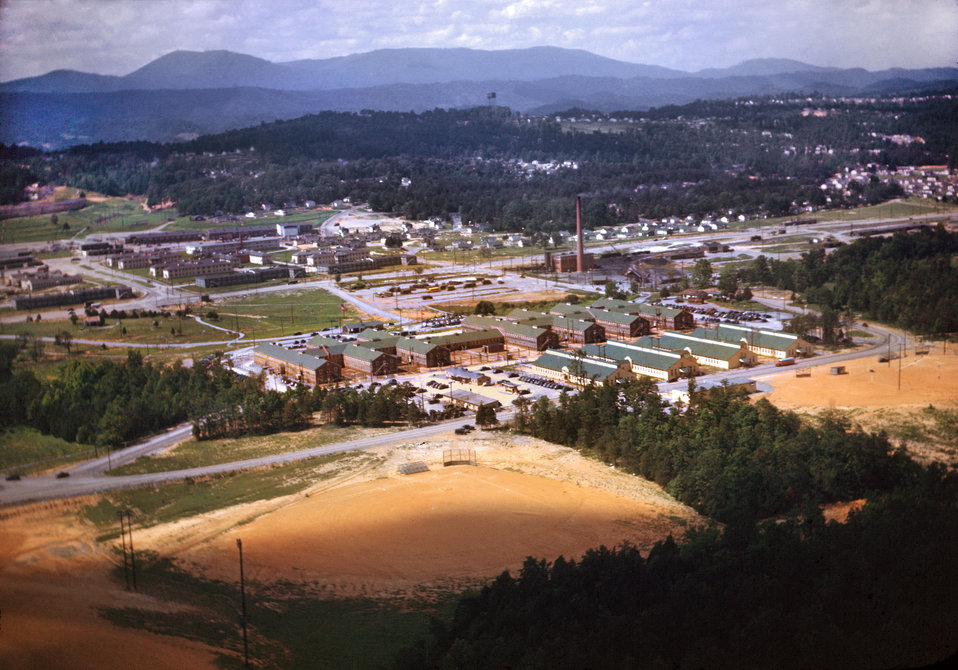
The Castle on the Hill Oak Ridge

DOE photo by Ed Wescott

The Castle On The Hill – Oak Ridge. The Administration Building, Oak Ridge Tennessee 1944.